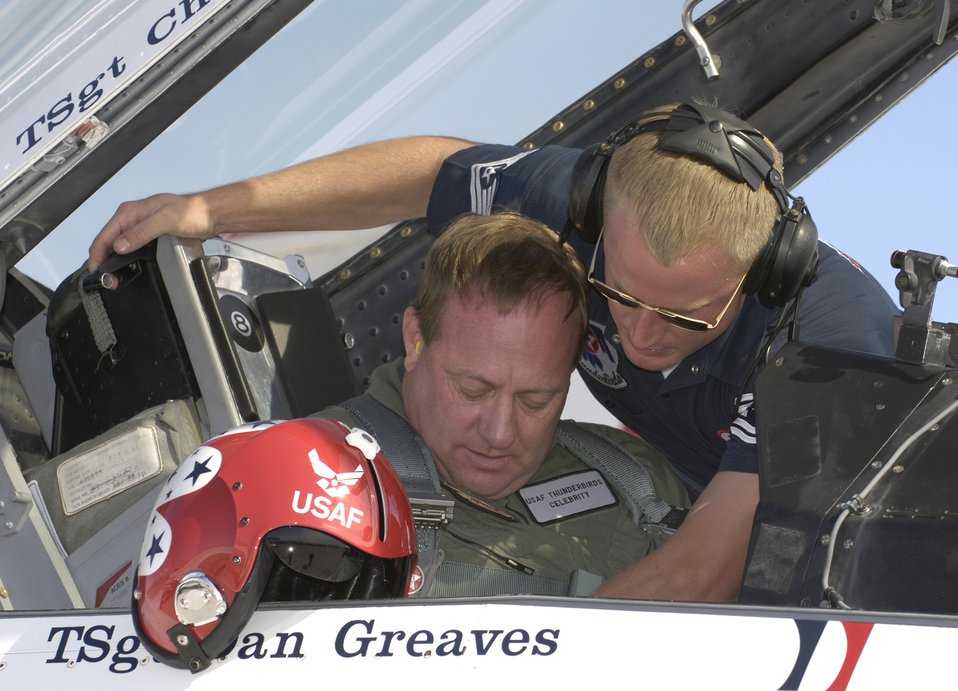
Thunderbird flight

Kenny Schrader, driver of the Air Force #21 Wood Brothers/JTG Racing Ford Fusion receives help getting strapped into an F-16 Fighting Falcon Thunderbird for an orientation flight on Thursday, Mar. 9, 2006.